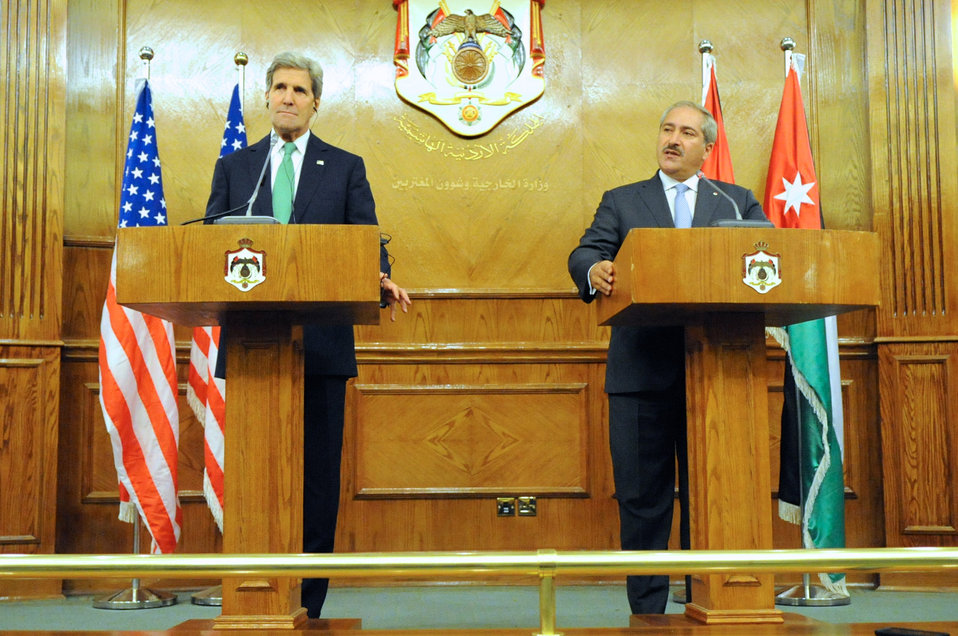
Secretary Kerry and Jordanian Foreign Minister Judeh Address Reporters

Jordanian Foreign Minister Nasser Judeh addresses reporters during a joint news conference with U.S. Secretary of State John Kerry following a meeting focused on Middle East issues in Amman, Jordan, on November 7, 2013.